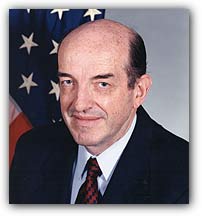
Michael Copps 4